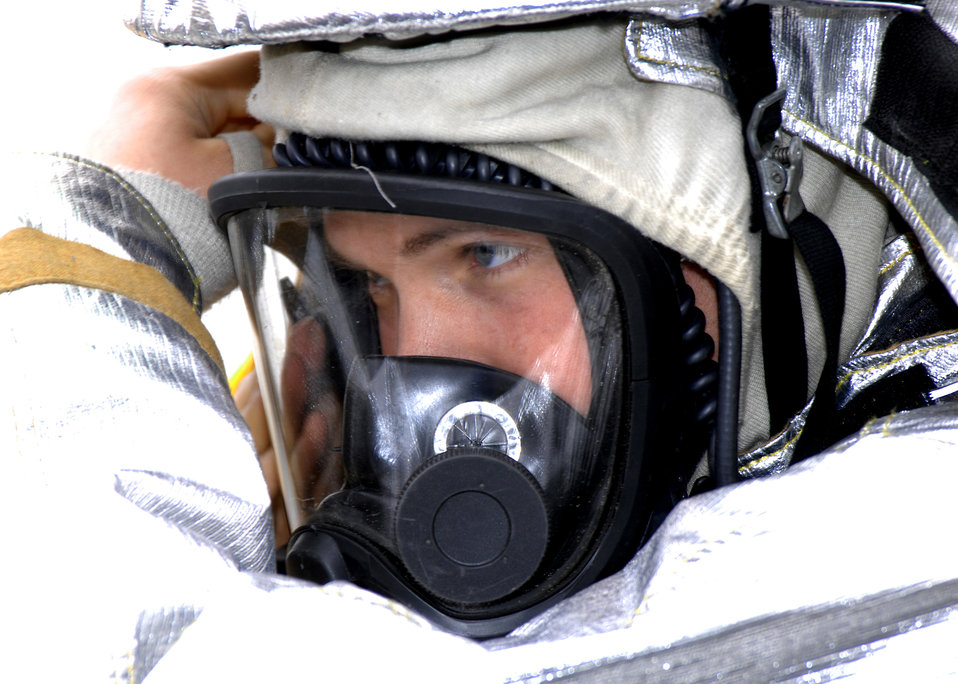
Getting it right

Firefighter Staff Sgt. Jeremy Luedtke prepares to take part in an emergency response exercise Jan. 25, 2010, at Travis Air Force Base, Calif.